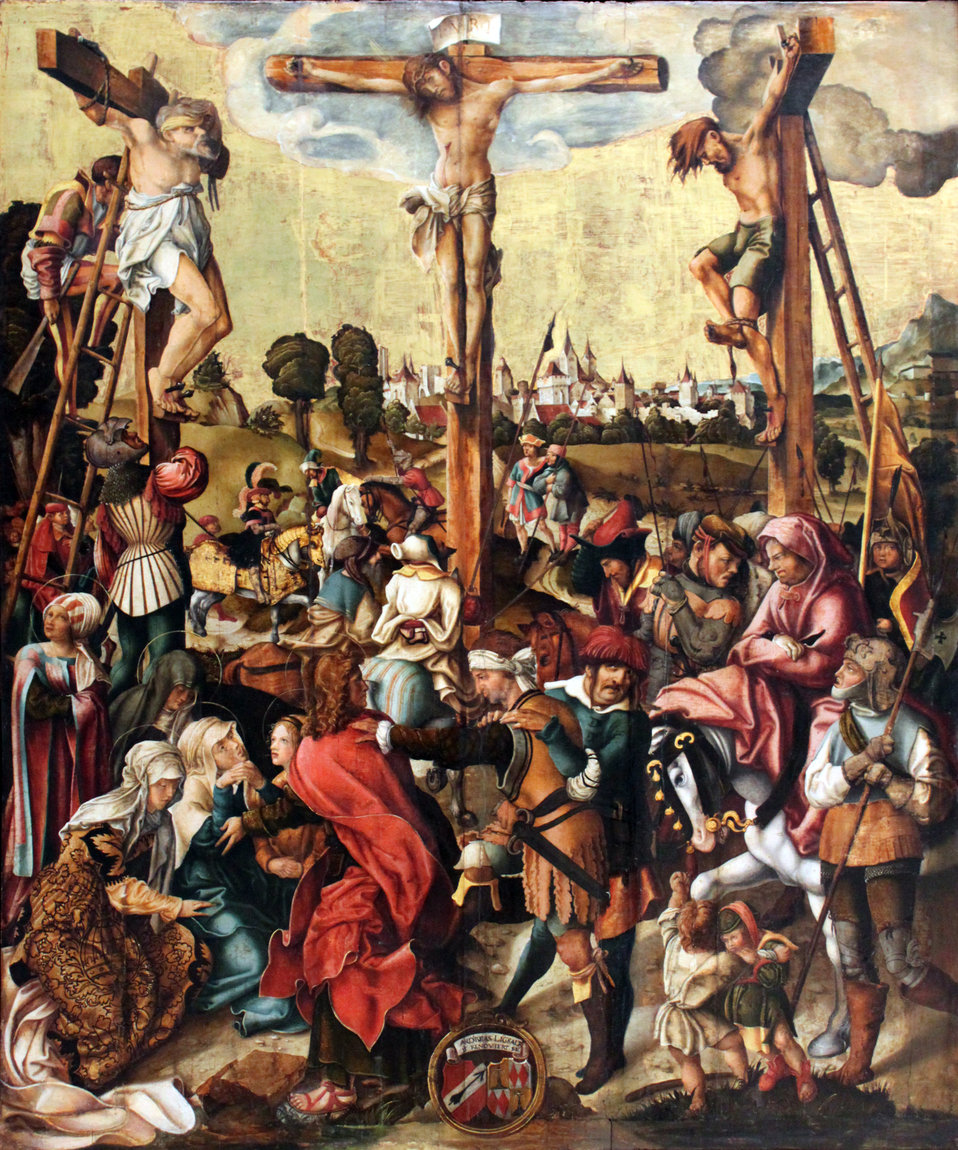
1520 Breu d.Ä. Kreuzigung Christi anagoria